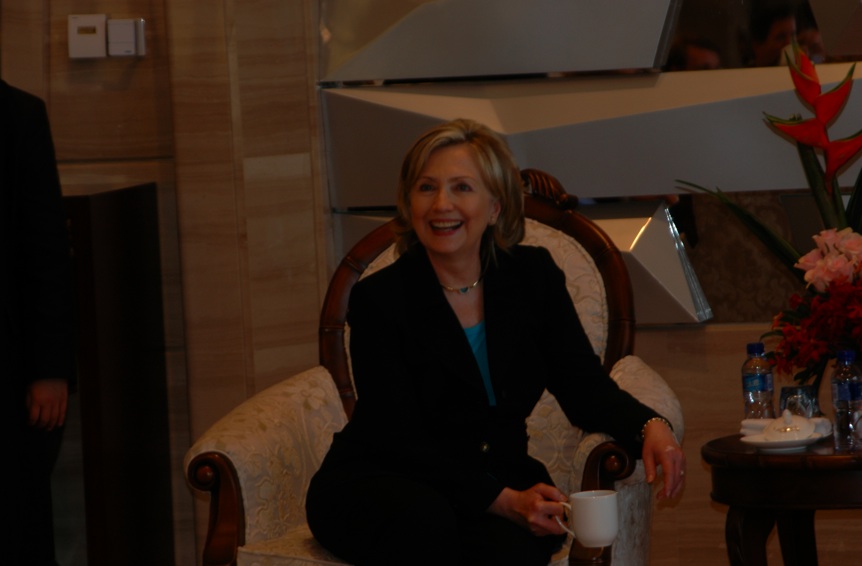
Secretary Clinton Speaks With Senior State Department Officials

Secretary Clinton speaks with senior U.S. Department of State officials in Shanghai, China, May 22, 2010.